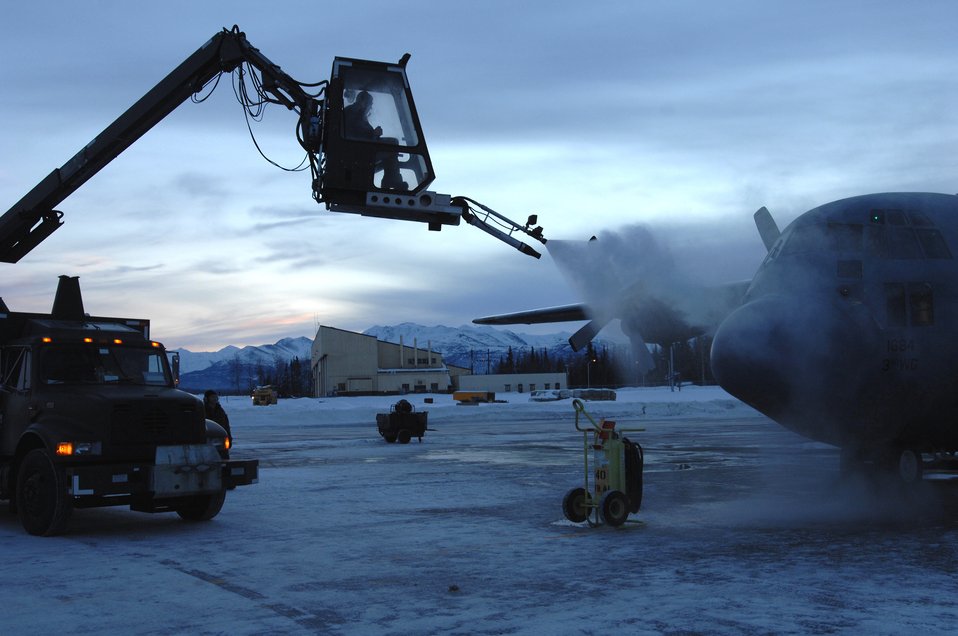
De-icing a C-130 Hercules

Senior Airman Steven Ferrin de-ices a C-130 Hercules Feb. 15 before it takes off from Elmendorf Air Force Base, Alaska, on a training mission. Airman Ferrin is a crew chief for the 703rd Aircraft Maintenance Squadron and the C-130 belongs to the 517th Airlift Squadron.